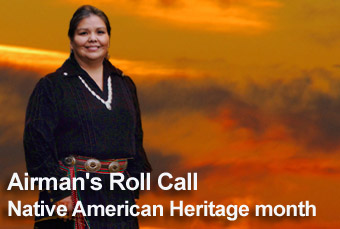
Airman's Roll Call: Native American Heritage Month

This week's Airman's Roll Call focuses on Native American Indian Heritage Month. Many Airmen take this time to recognize the contributions of Native American Indians to American history and military culture.